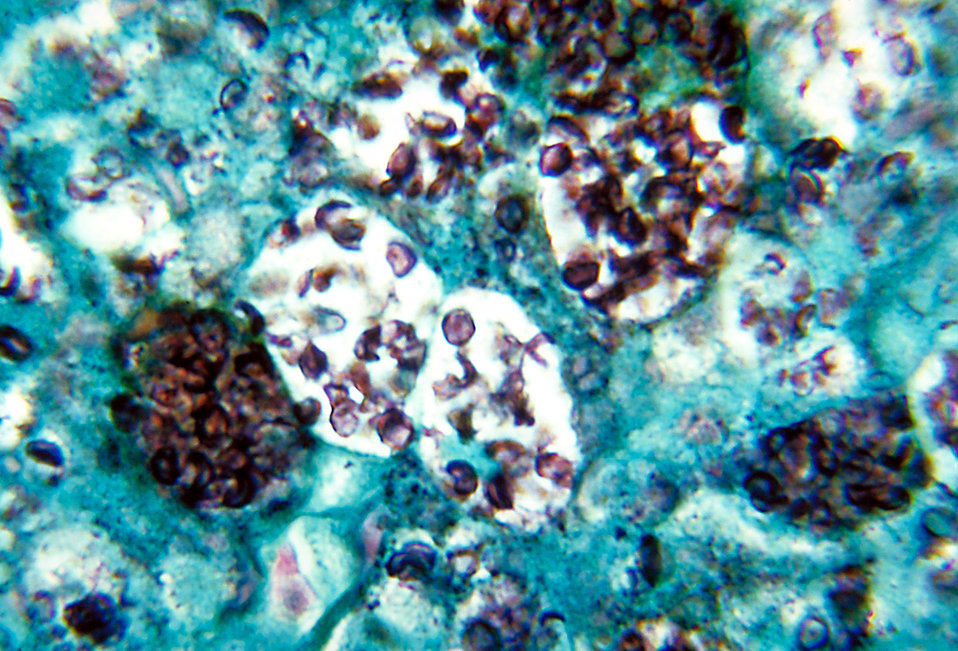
Note the histopathologic changes seen in histoplasmosis due to Histoplasma capsulatum using methenamine silver stain.